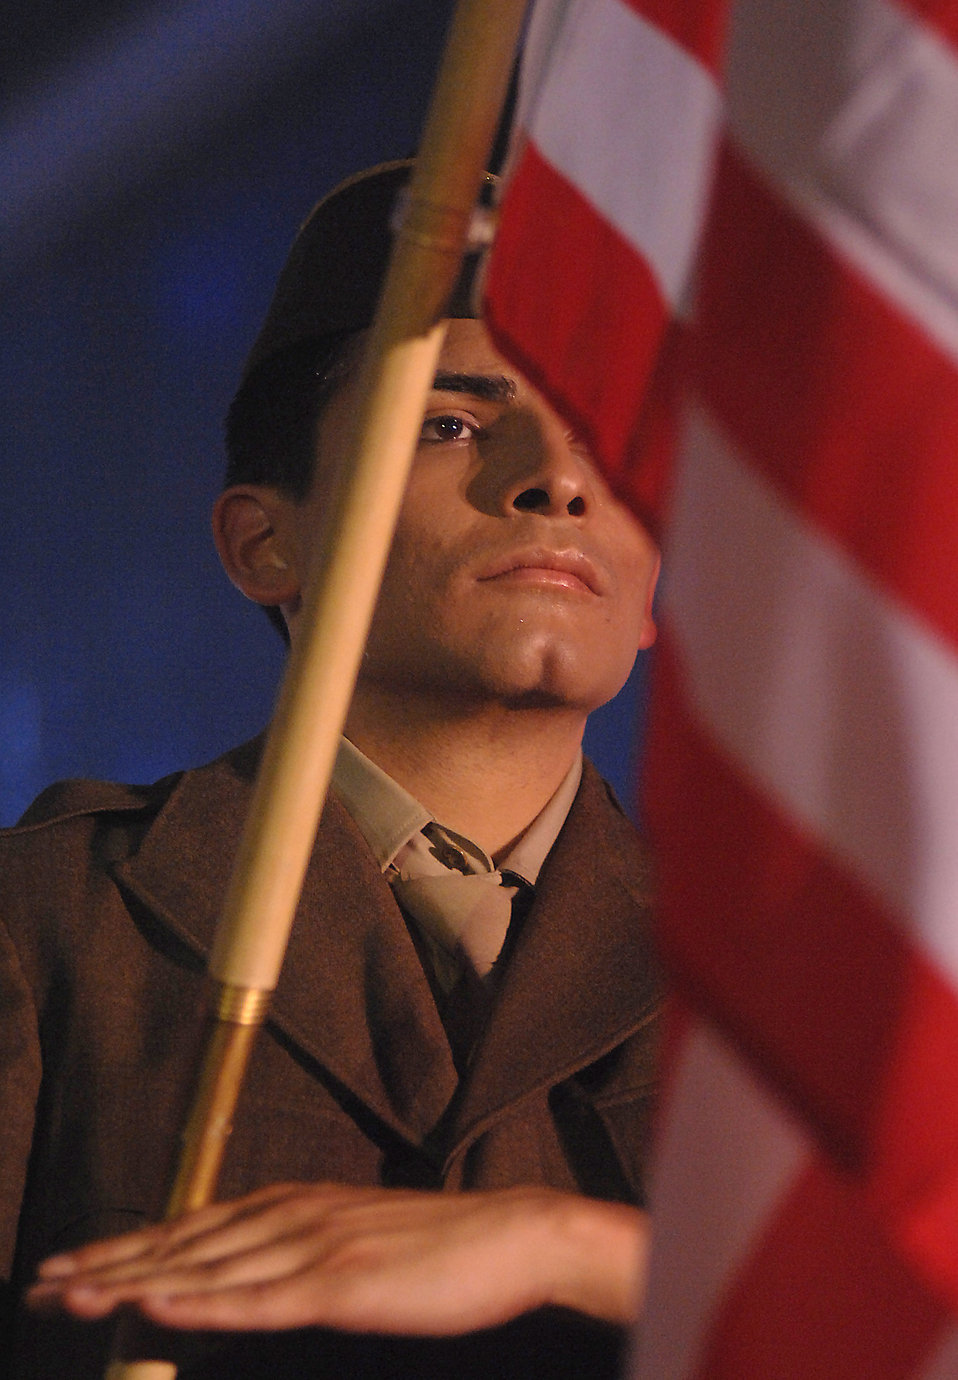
Tops in Blue entertains at Air Force Week

Senior Airman Rick Rosales holds the American Flag during a performance with Tops in Blue as part of Air Force Week June 5 at the Radisson Hotel Sacramento, Calif. Tops in Blue is the Air Force's premier entertainment group that performs for audiences around the globe.